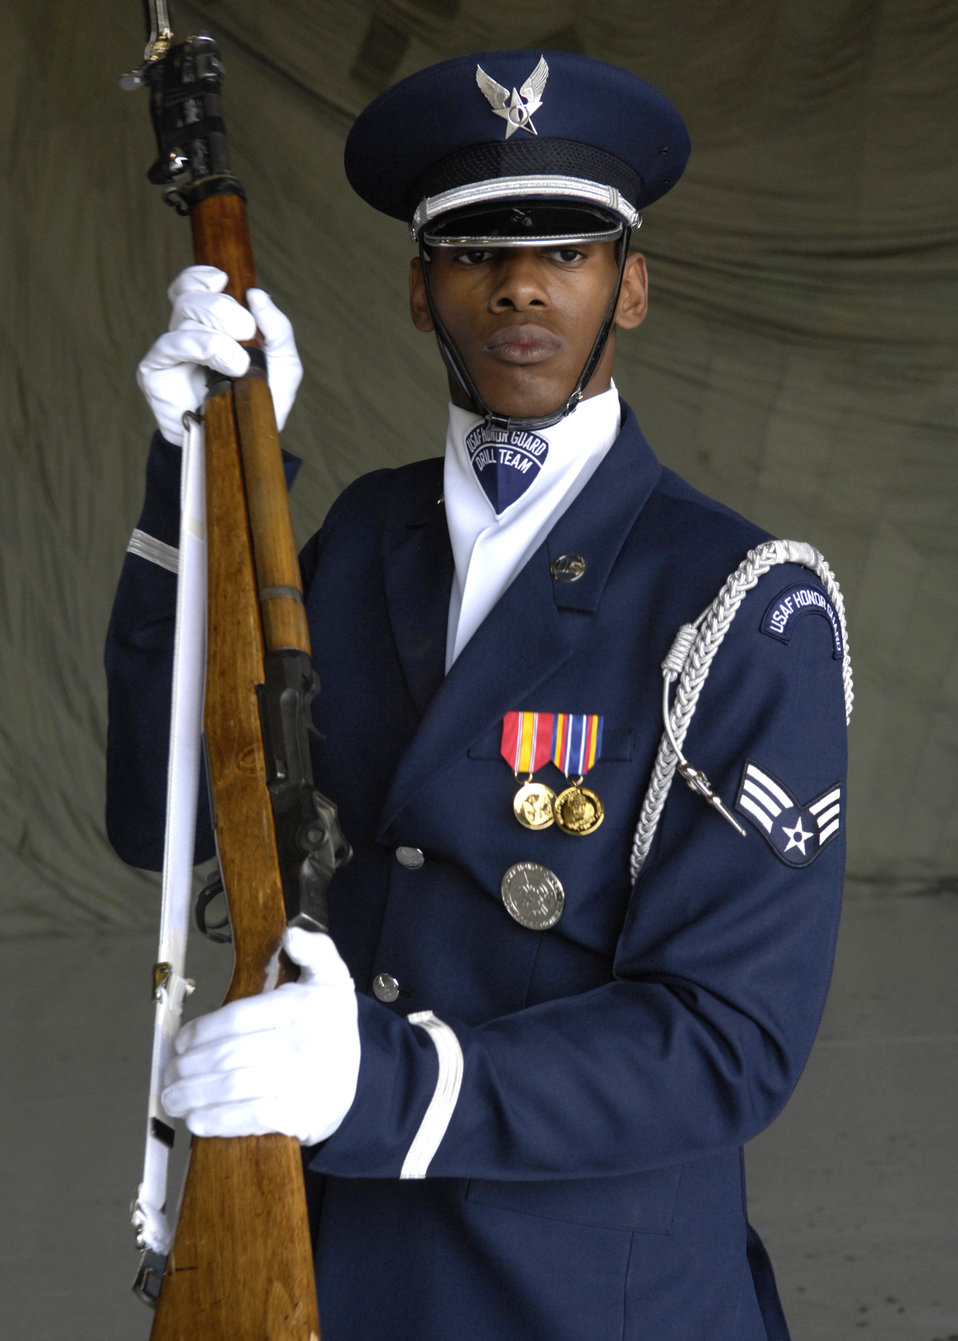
Showcasing the Air Force mission

Senior Airman Jermaine James, of the United States Air Force Honor Guard Drill Team, performs March 24 during the air show at Luke Air Force Base, Ariz. The drill team is the traveling component of the Air Force Honor Guard and tours Air Force bases worldwide showcasing the precision of today's Air Force to recruit, retain and inspire Airmen for the Air Force mission.